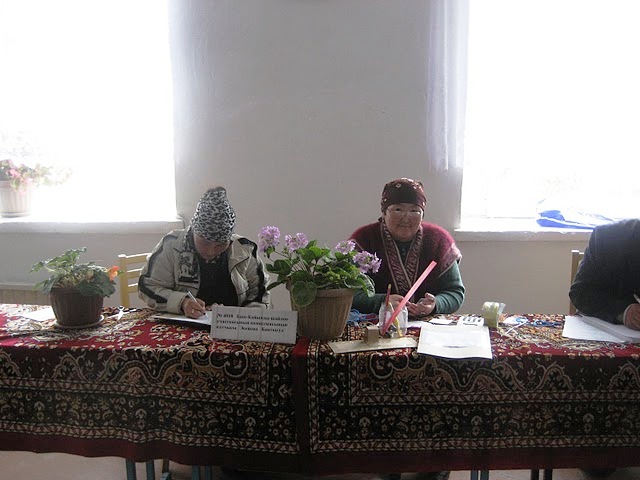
Kyrgyz Election Volunteers Pose for a Photo

Kyrgyz election volunteers in Kyrgyzstan pose for a photo in October 2010.